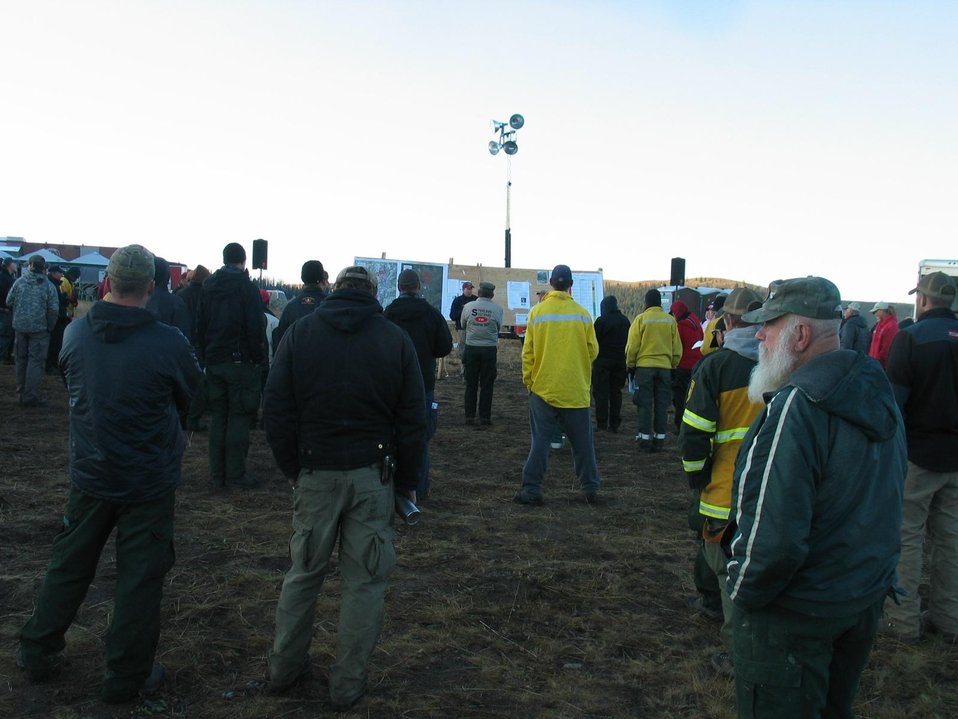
A morning briefing is held at Spike Camp at the Eureka Fire on Aug. 25, 2013. The Eureka Fire in the Beaverhead-Deerlodge National Forest near Ennis, MT began on Aug. 12 2013 by lighting has consumed approximately 6,468 acres and is 40% contained.